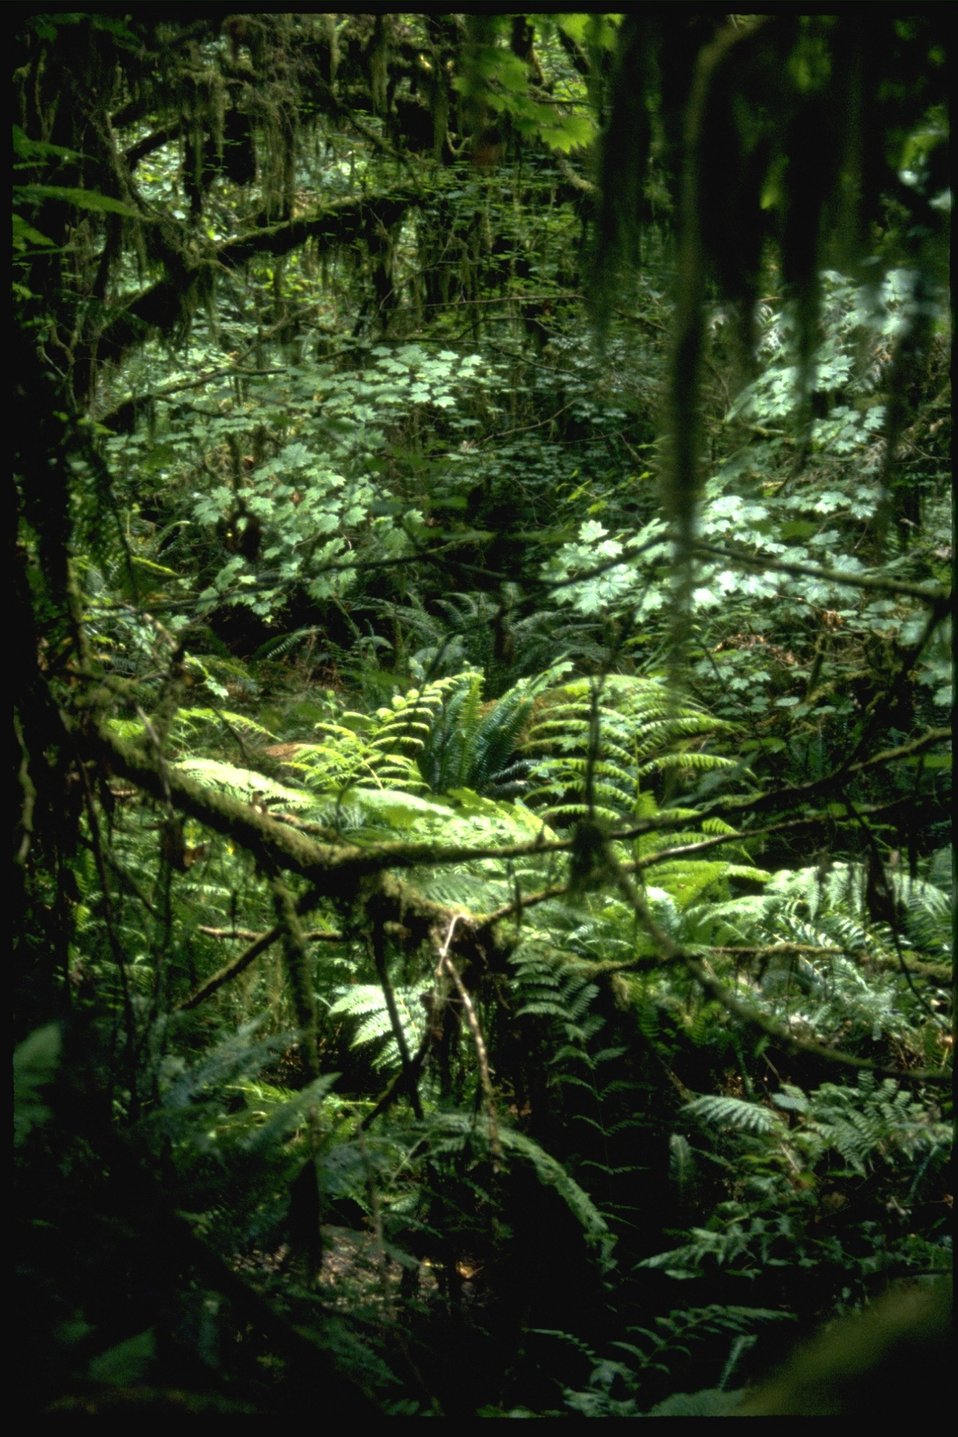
Scenic forest photograph.